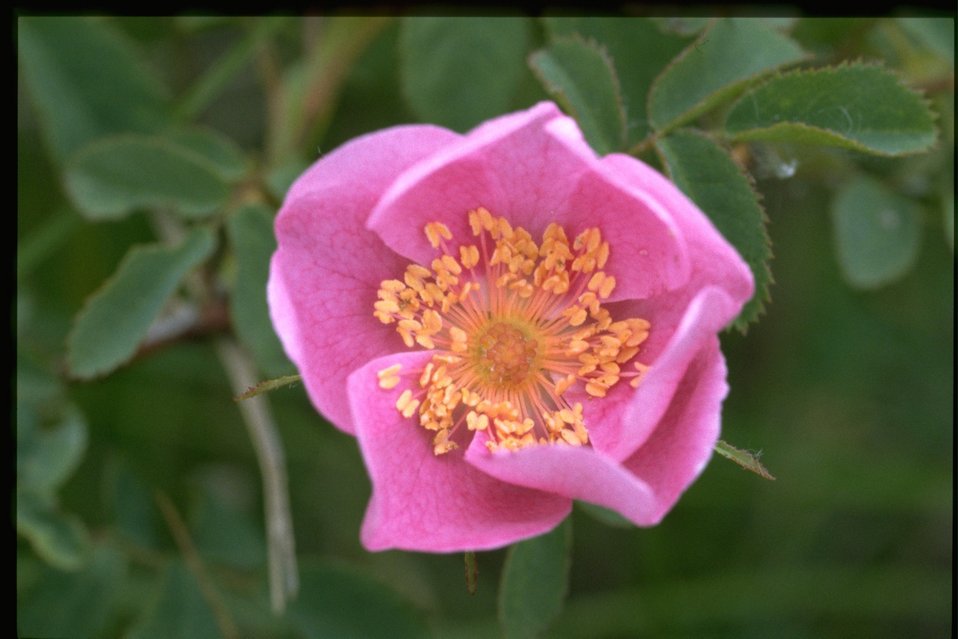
Closeup shot of Rosa nutkana.